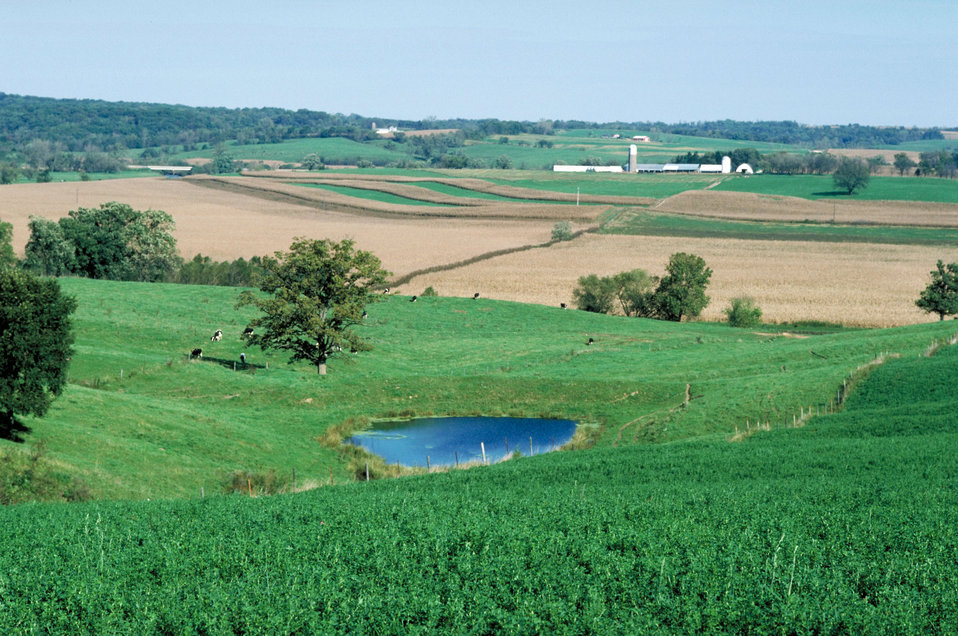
Good risk management tools aid in conservation efforts and help protect beautiful views like this for the next generation.